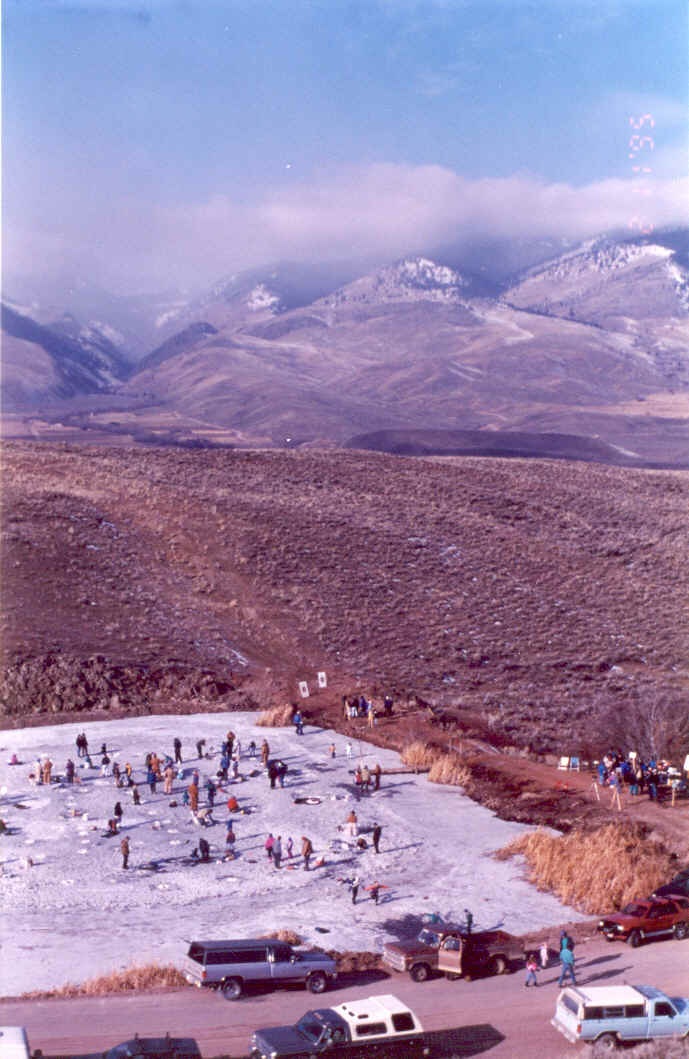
People Salmon Field Office UCSC Upper Columbia Salmon Clearwater District